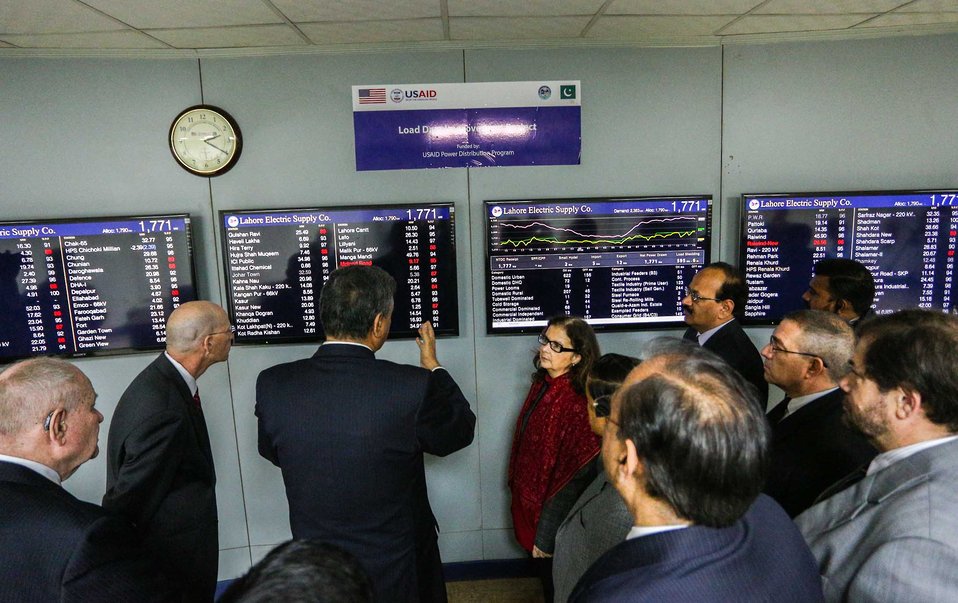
U.S. Improves LESCO’s Capacity to Reduce Load-Shedding

Unplanned load-shedding is one of the leading challenges in the country’s power crisis, costing Pakistan an estimated two percent of its Gross Domestic Product and 400,000 jobs in 2012. Load-shedding is a consequence of the imbalance between electricity generation and demand, and only increased generation will completely eliminate load-shedding. Unscheduled load-shedding, however, is the result of a lack of real-time energy consumption data and can be reduced by improved monitoring systems, such as the USAID project inaugurated at LESCO.